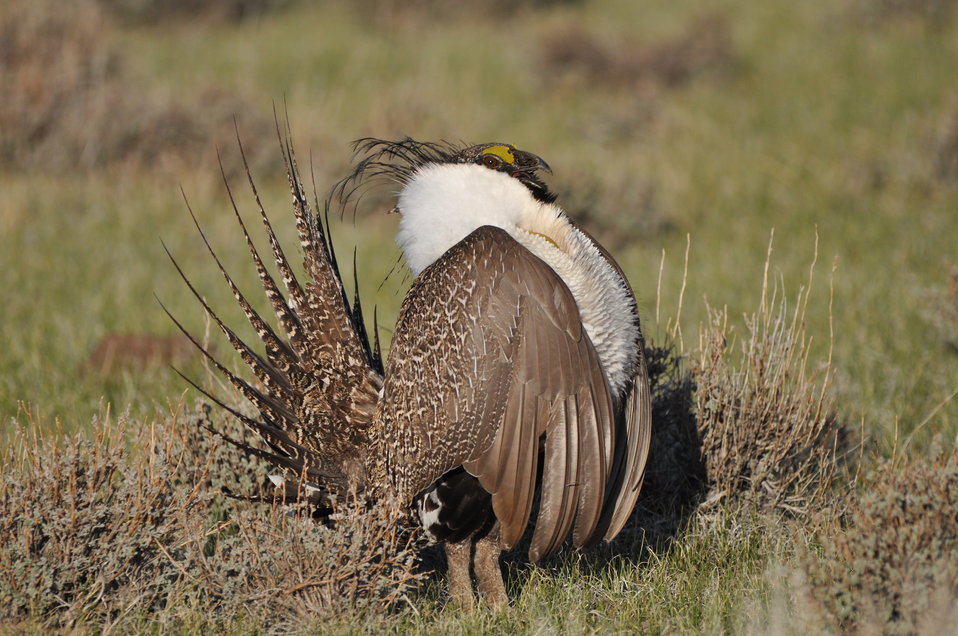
Greater Sage-Grouse

Photo Credit: Jeannie Stafford/USFWS
A greater sage-grouse male struts at a lek (dancing or mating ground) near Bridgeport, CA to attract a mate.